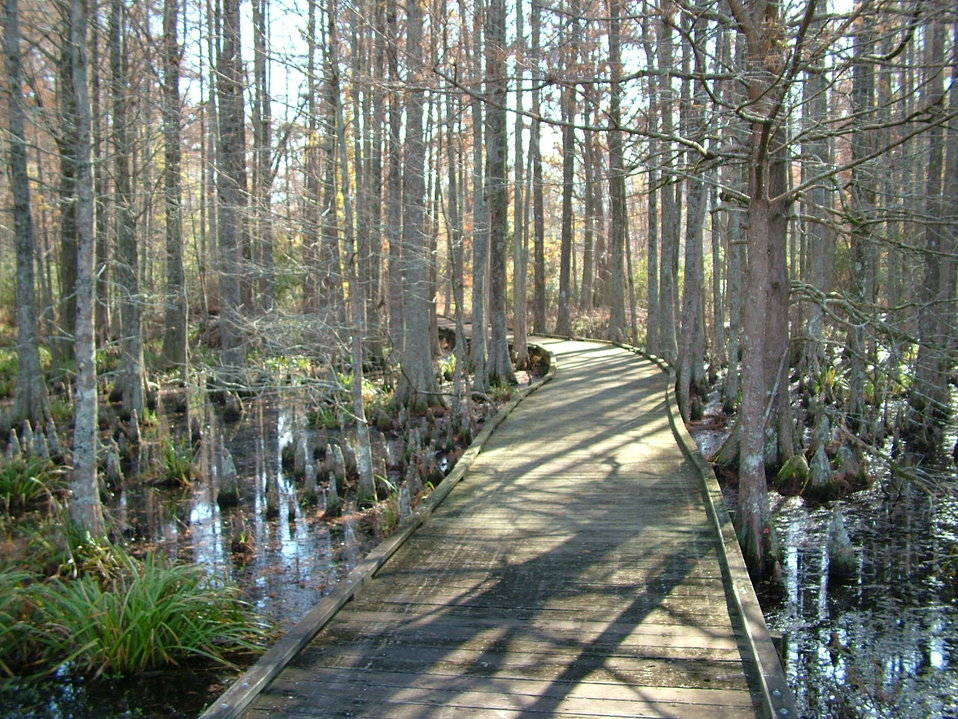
New Holland Trail 2

At Mattamuskeet National Wildlife Refuge.